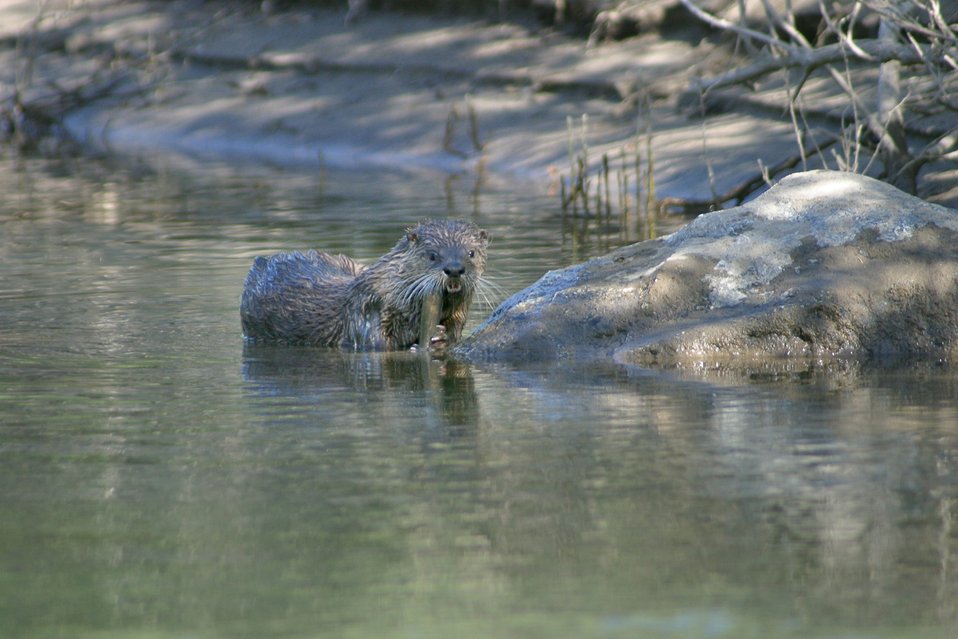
Wild section of the Rogue River from Grave Creek to Foster Bar May 19 to May 22.